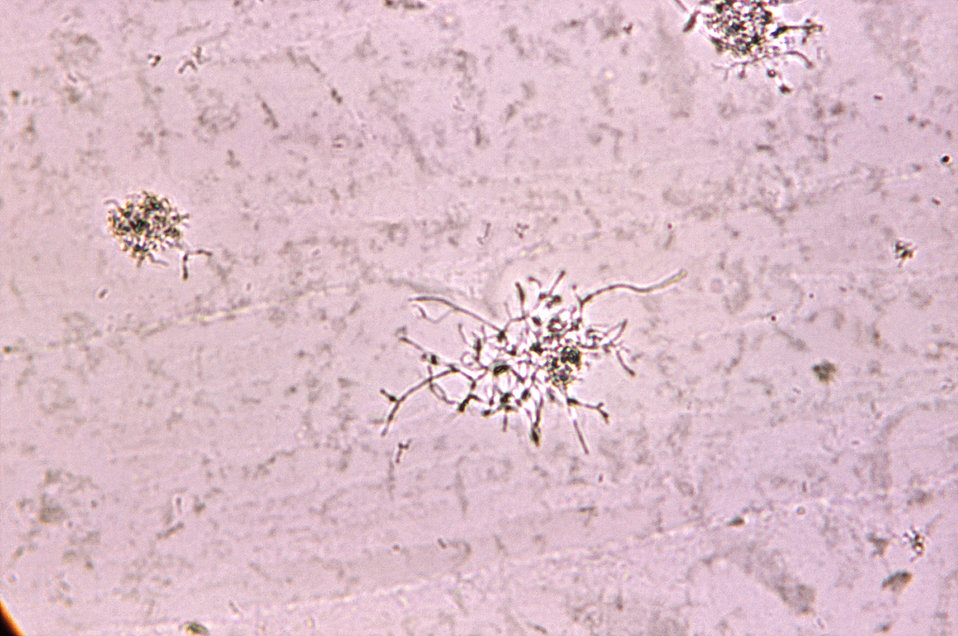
Magnified 380X, this image depicts the morphologic characteristics displayed by a Gram-positive, Actinomyces naeslundi bacterial microcolony, of the strain, W-1096, which was cultivated, for a 20 hour time period, on an unknown culture medium.